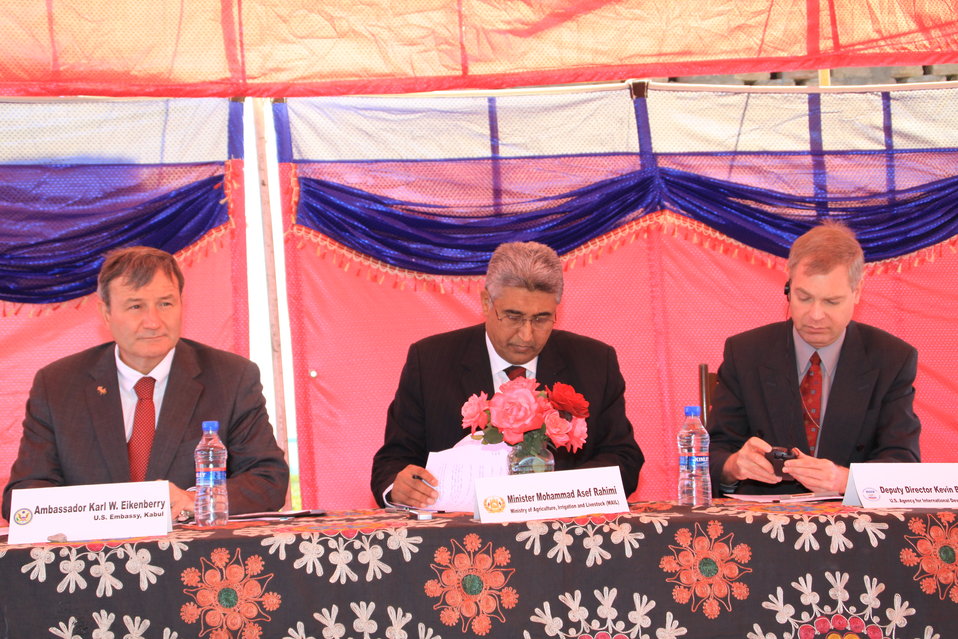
AVIPA Plus Wheat Seed Distribution 101005

US Ambassador Karl Eikenberry and USAID Acting Mission Director Kevin Brownawell joined the Minister of Agriculture, Irrigation and Livestock, H.E. Minister Mohammed Rahimi in signing a Memorandum of Understanding and distributing vouchers to area farmers for wheat and fertilizer.

US Ambassador Karl Eikenberry and USAID Acting Mission Director Kevin Brownawell joined the Minister of Agriculture, Irrigation and Livestock, H.E. Minister Mohammed Rahimi in signing a Memorandum of Understanding and distributing vouchers to area farmers for wheat and fertilizer.